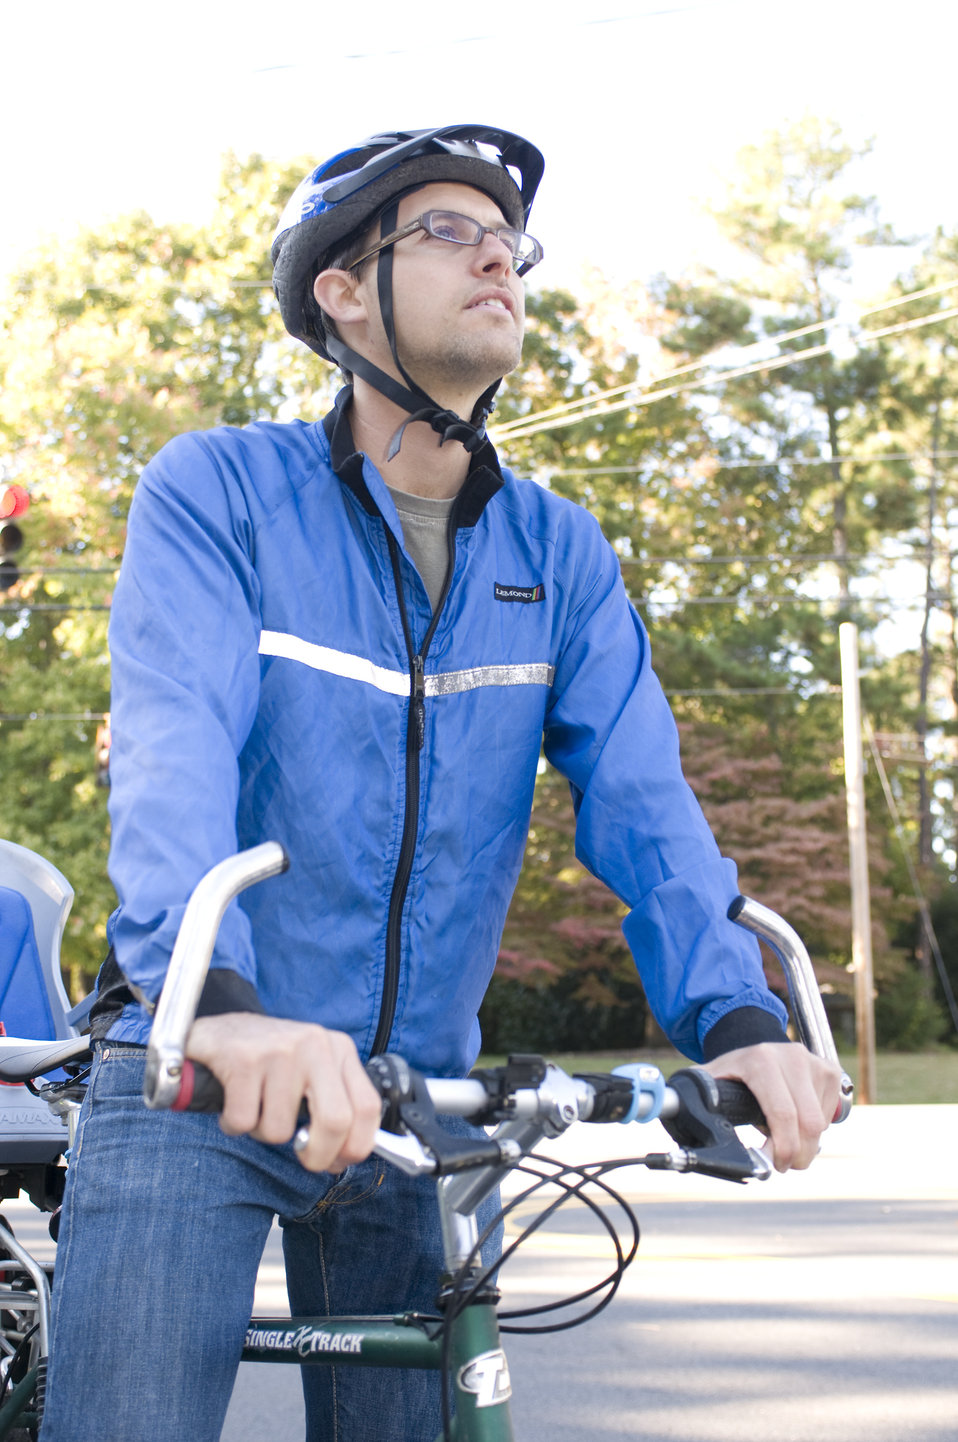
Stopping for a brief respite before continuing his exercise, this male bicyclist was wearing a brightly-colored windbreaker, which would help drivers see them more easily, as well as a protective, aerodynamic helmet, and snug-fitting pants, all adding to an overall safer bike ride.